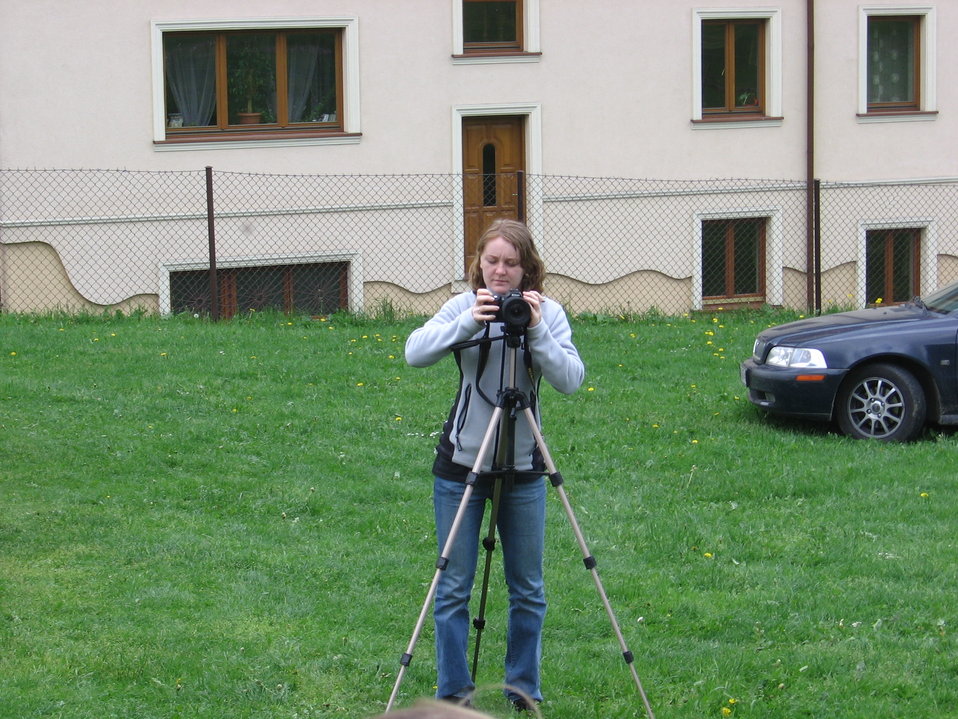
Poland Wikimedia Meetup in Rabka 22-25.05.2008 Polski: Zlot Wikimedia Polska - Rabka 22-25.05.2008
przygotowania do zdjęcia grupowego